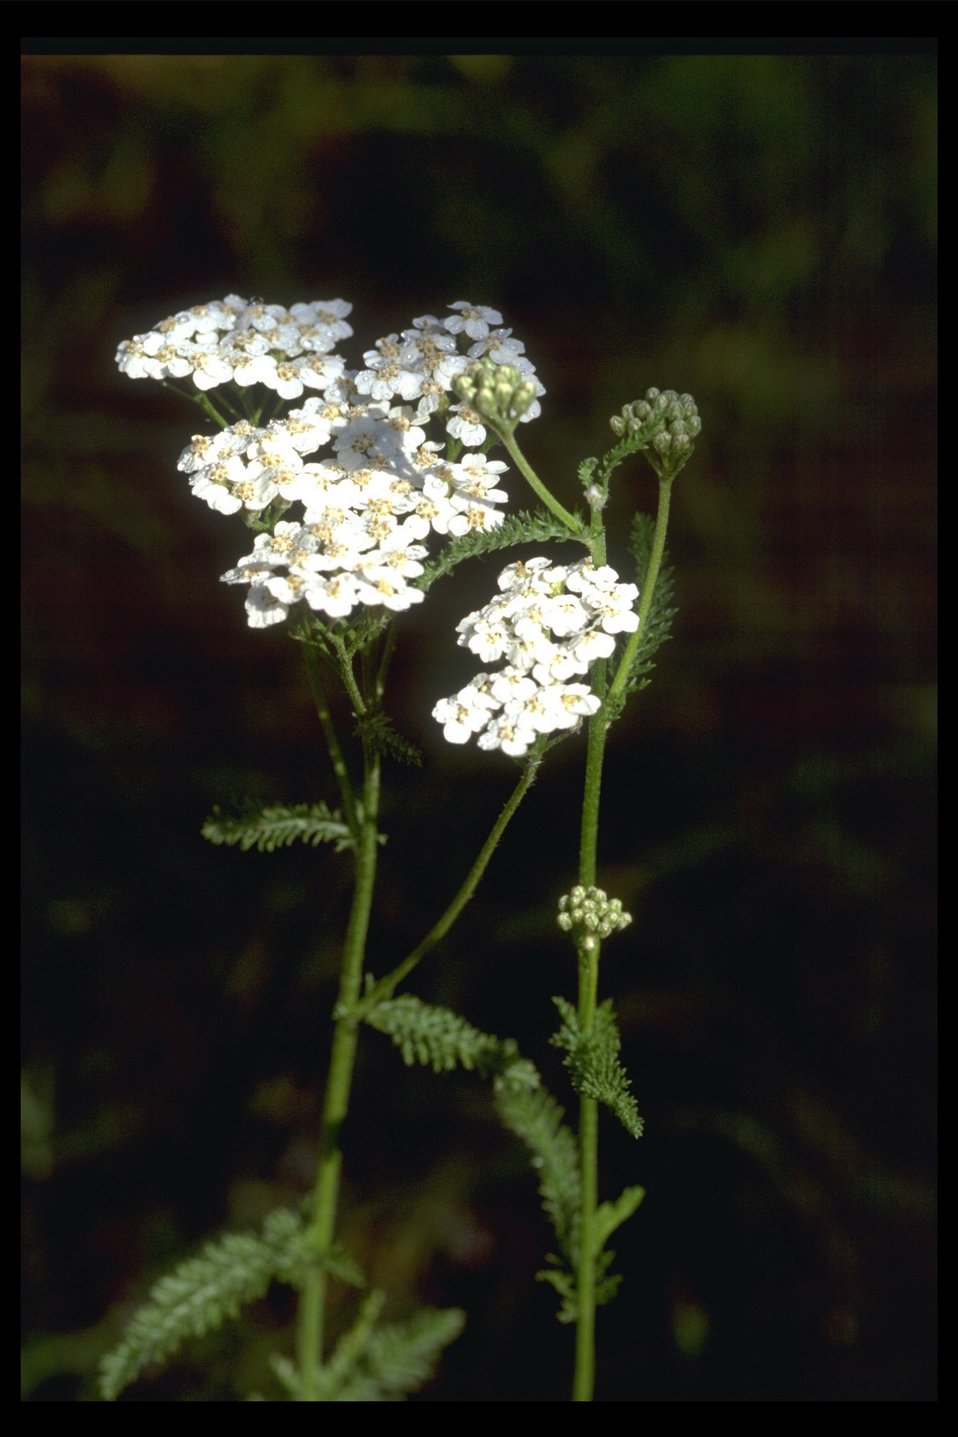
Close up of Common Yarrow (Achillea millefolium) found at Lower Table Rock.